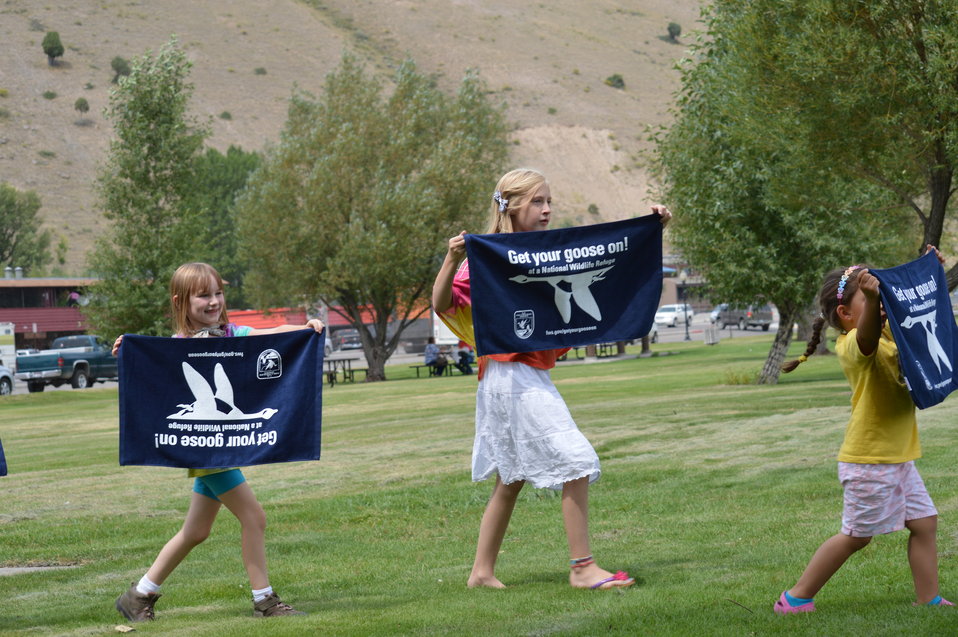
Get Your Goose On! - National Elk Refuge Style

On August 10, 2012 the U.S. Fish and Wildlife Service and Partners celebrated the 100 year anniversary of the establishment of the National Elk Refuge. In these photos, young attendees, along with Puddles the Blue Goose and the National Elk Refuge's mascot, showed us how to Get Your Goose On! with style.